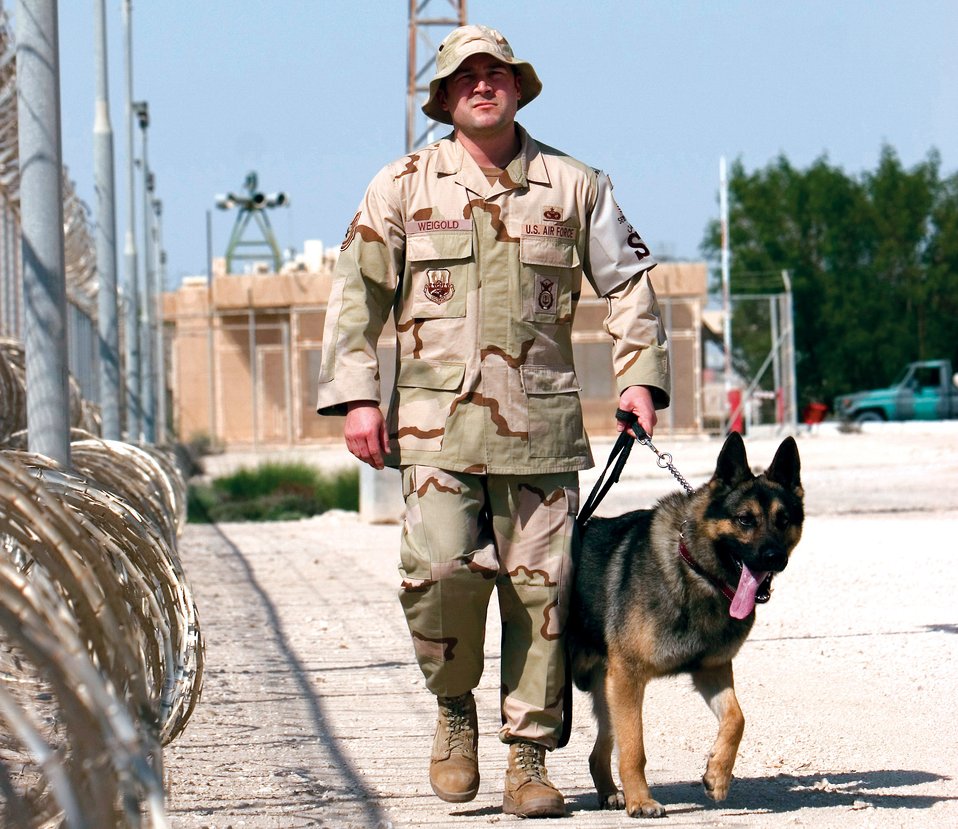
Working dog teams search, patrol together

Tech. Sgt. Bob Weigold walks his explosive detection dog, Timo, along the perimeter of the base Feb. 13 in Southwest Asia. Sergeant Weigold is the 379th Expeditionary Security Forces Squadron Military Working Dog Section element leader.